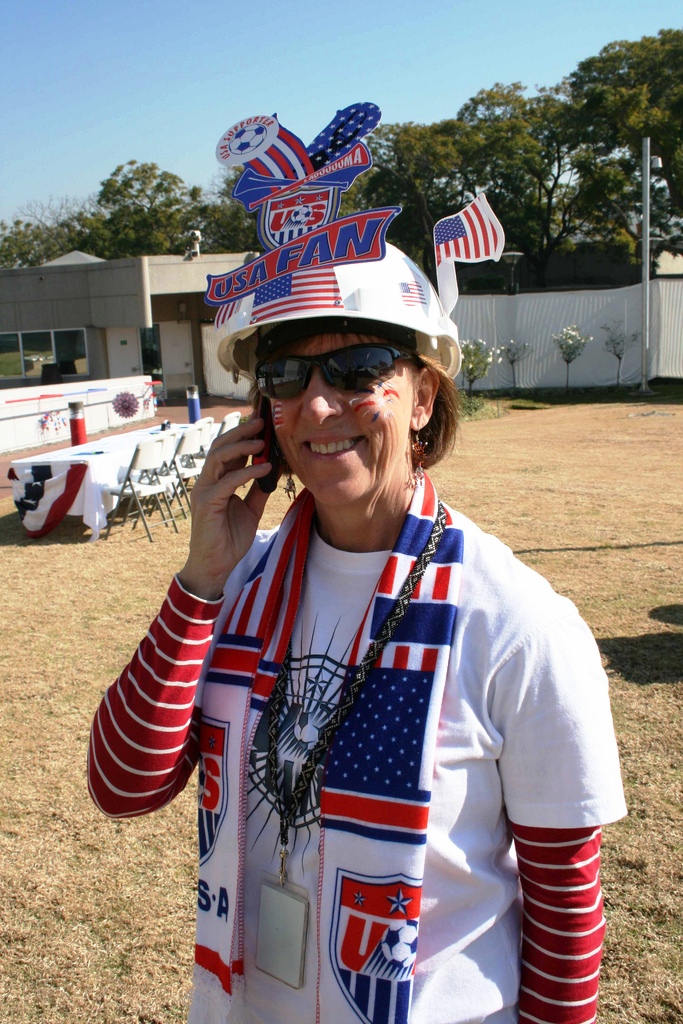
A Member of the U.S. Embassy Pretoria Staff Shows Her Fan Gear

A U.S. Embassy Pretoria staff member shows her fan gear at the Team USA pep rally before the U.S. vs. Algeria World Cup match on June 23, 2010, in Pretoria, South Africa.